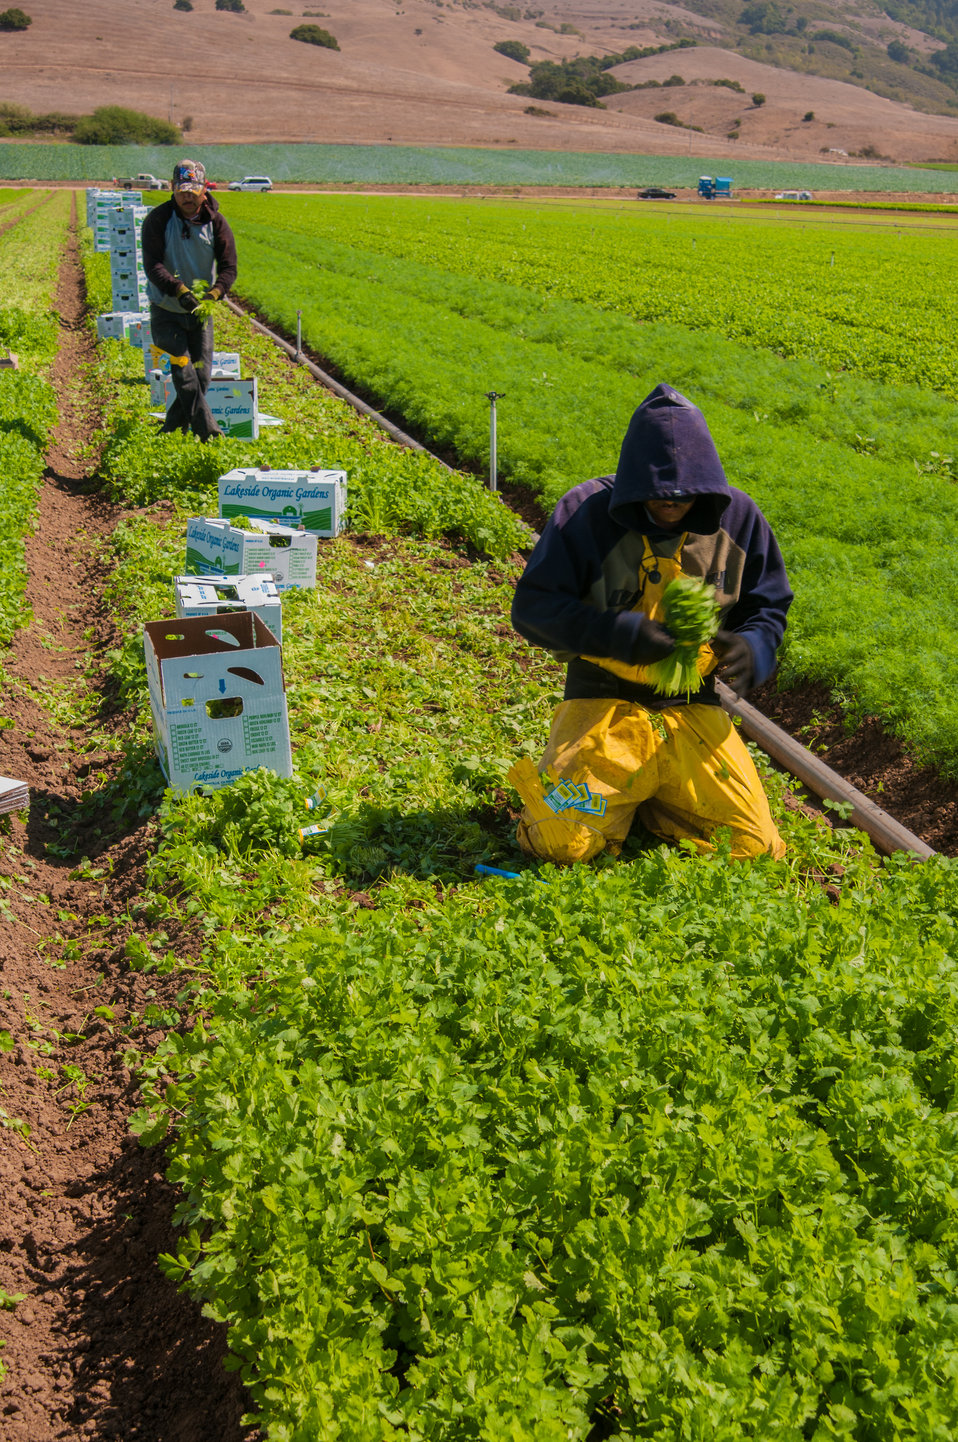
Migrant workers harvest Cilantro at Lakeside Organic Gardens in Watsonville, CA on Tuesday, Aug. 27, 2013.